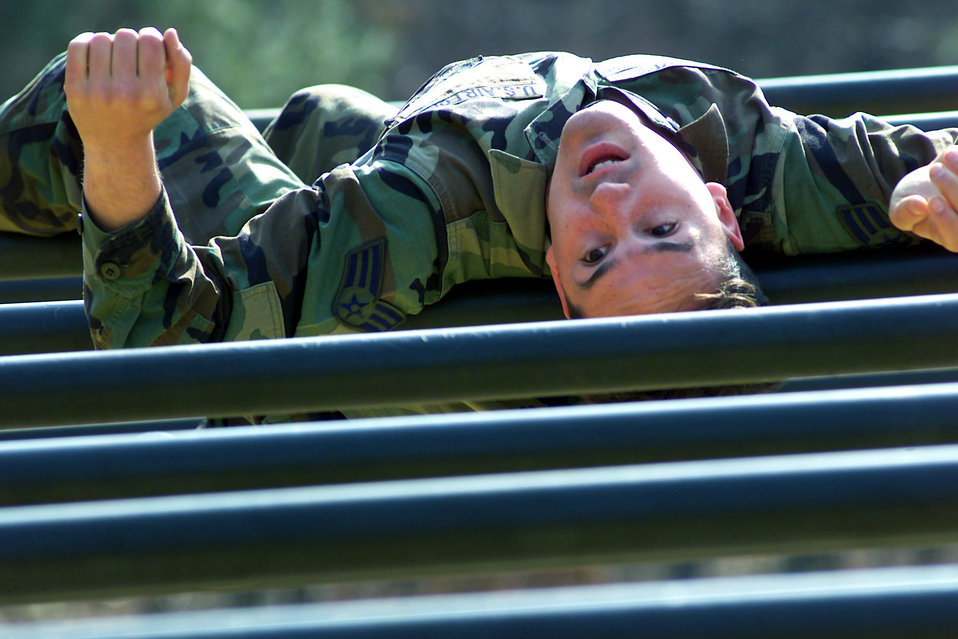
Tiger Challenge 2004

TWIN BRIDGES TRAINING AREA, South Korea -- Senior Airman Jeffrey Lowe weaves his body through the obstacle-course portion of Tiger Challenge 2004 here April 9. The weeklong annual competition tests tactical air control and command technicians on their navigation skills, job knowledge, physical endurance and marksmanship. Airman Lowe is assigned to the 607th Air Support Operations Squadron at Camp Red Cloud, South Korea.